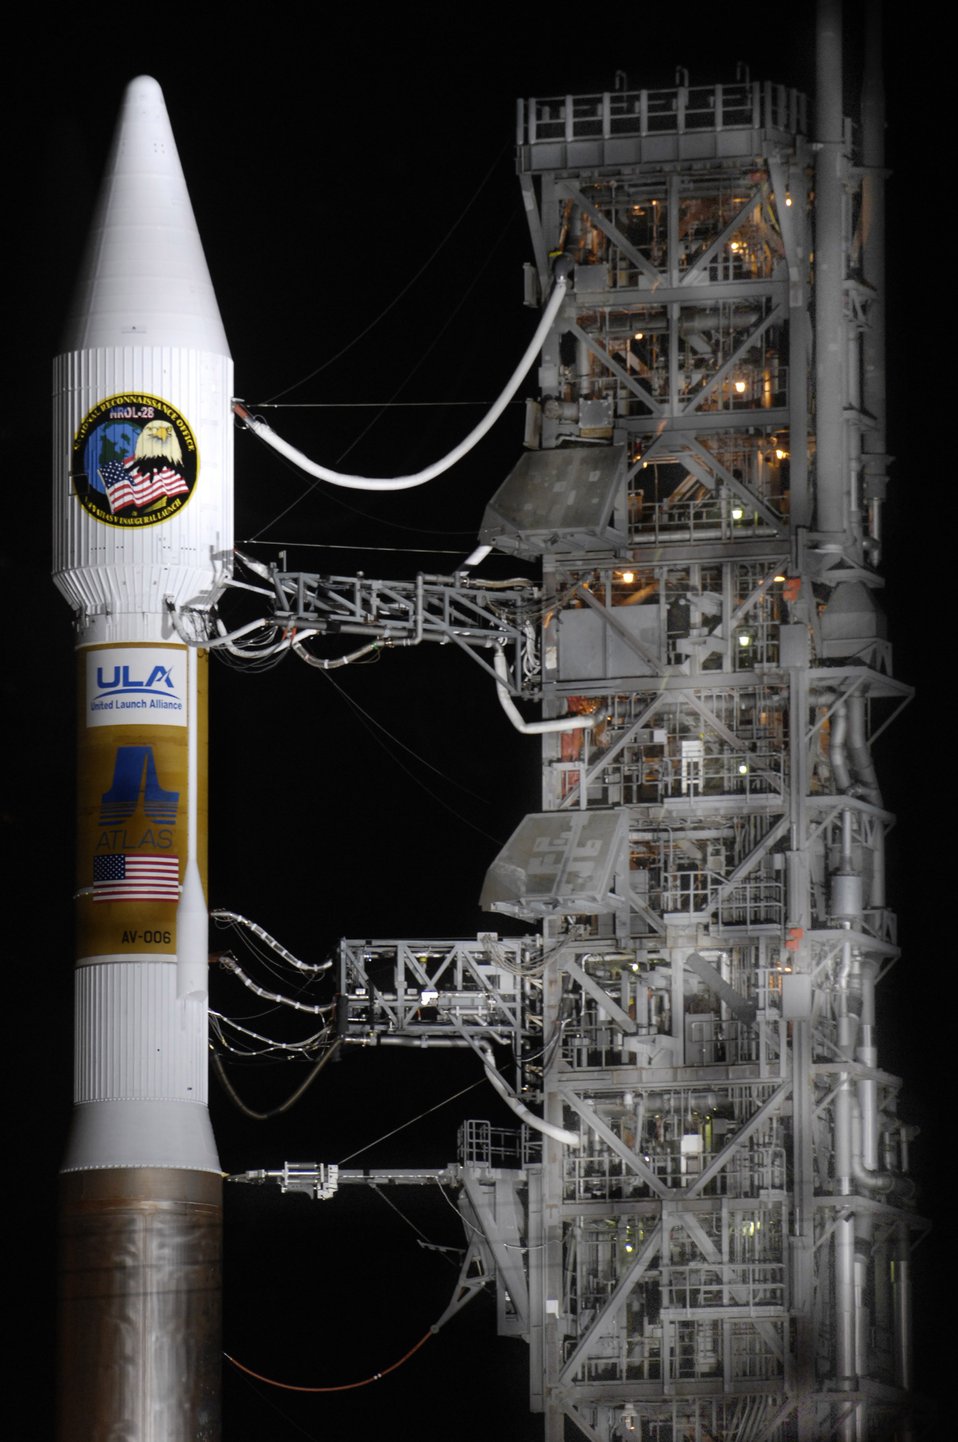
Vandenberg Airmen launch Atlas V rocket

An Atlas V stands on Space Launch Complex-3 during its mobile servicing tower rollback on March 12. The Atlas launched at 3:01 a.m. PDT March 13 at Vandenberg Air Force Base, Calif. It carried a National Reconnaissance Office payload and was the first Atlas V to launch from the West Coast.